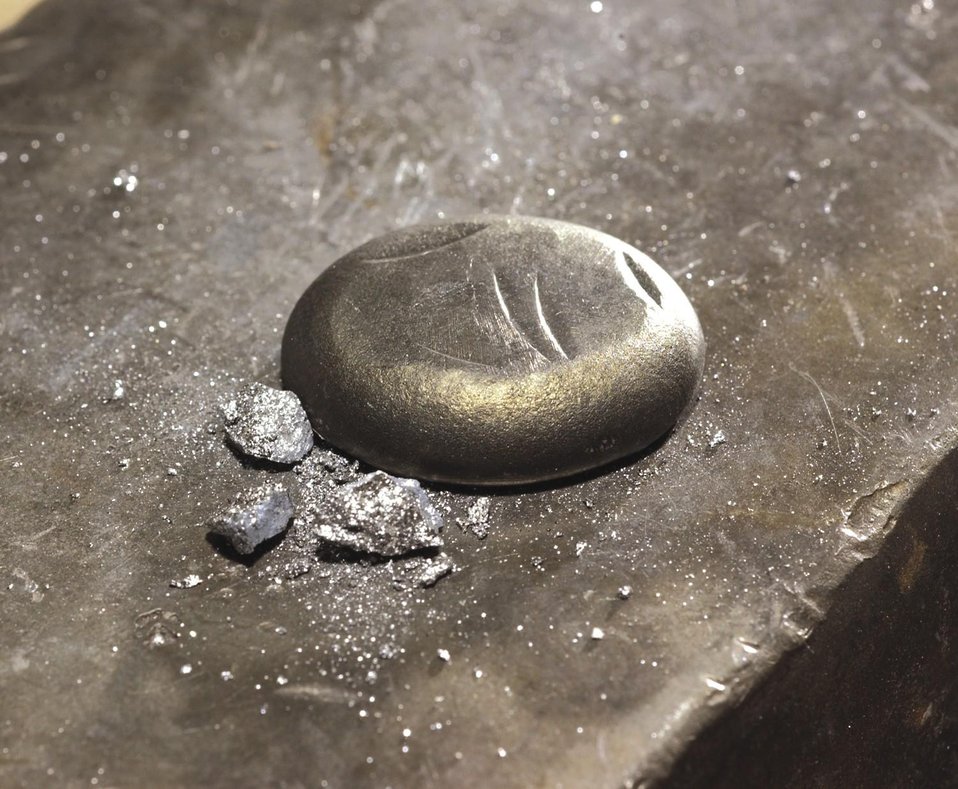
COMPARING A YTTRIUM-SILVER BUTTON AFTER REPEATED HAMMER BLOWS AND A GADOLINIUM-SILICON-GERMANIUM MATERIAL SHATTERED WITH A LIGHT TAP FROM A HAMMER.

INTERMETALLIC MATERIALS -- COMPOUNDS CONSISTING OF TWO OR MORE METALS BONDED TOGETHER -- POSSESS CHEMICAL, PHYSICAL, ELECTRICAL, MAGNETIC AND MECHANICAL PROPERTIES THAT ARE OFTEN SUPERIOR TO ORDINARY METALS. THEIR USEFULNESS HAS BEEN LIMITED UP TO NOW, BECAUSE THEY WERE FOUND TO BE BRITTLE AT ROOM TEMPERATURE. RESEARCHERS AT AMES LAB HAVE RECENTLY IDENTIFIED MORE THAN A DOZEN RARE EARTH/MAIN GROUP METAL INTERMETALLIC COMPOUNDS THAT SHOW HIGH LEVELS OF DUCTILITY AT ROOM TEMPERATURE, MAKING THESE MATERIALS MORE USEFUL.